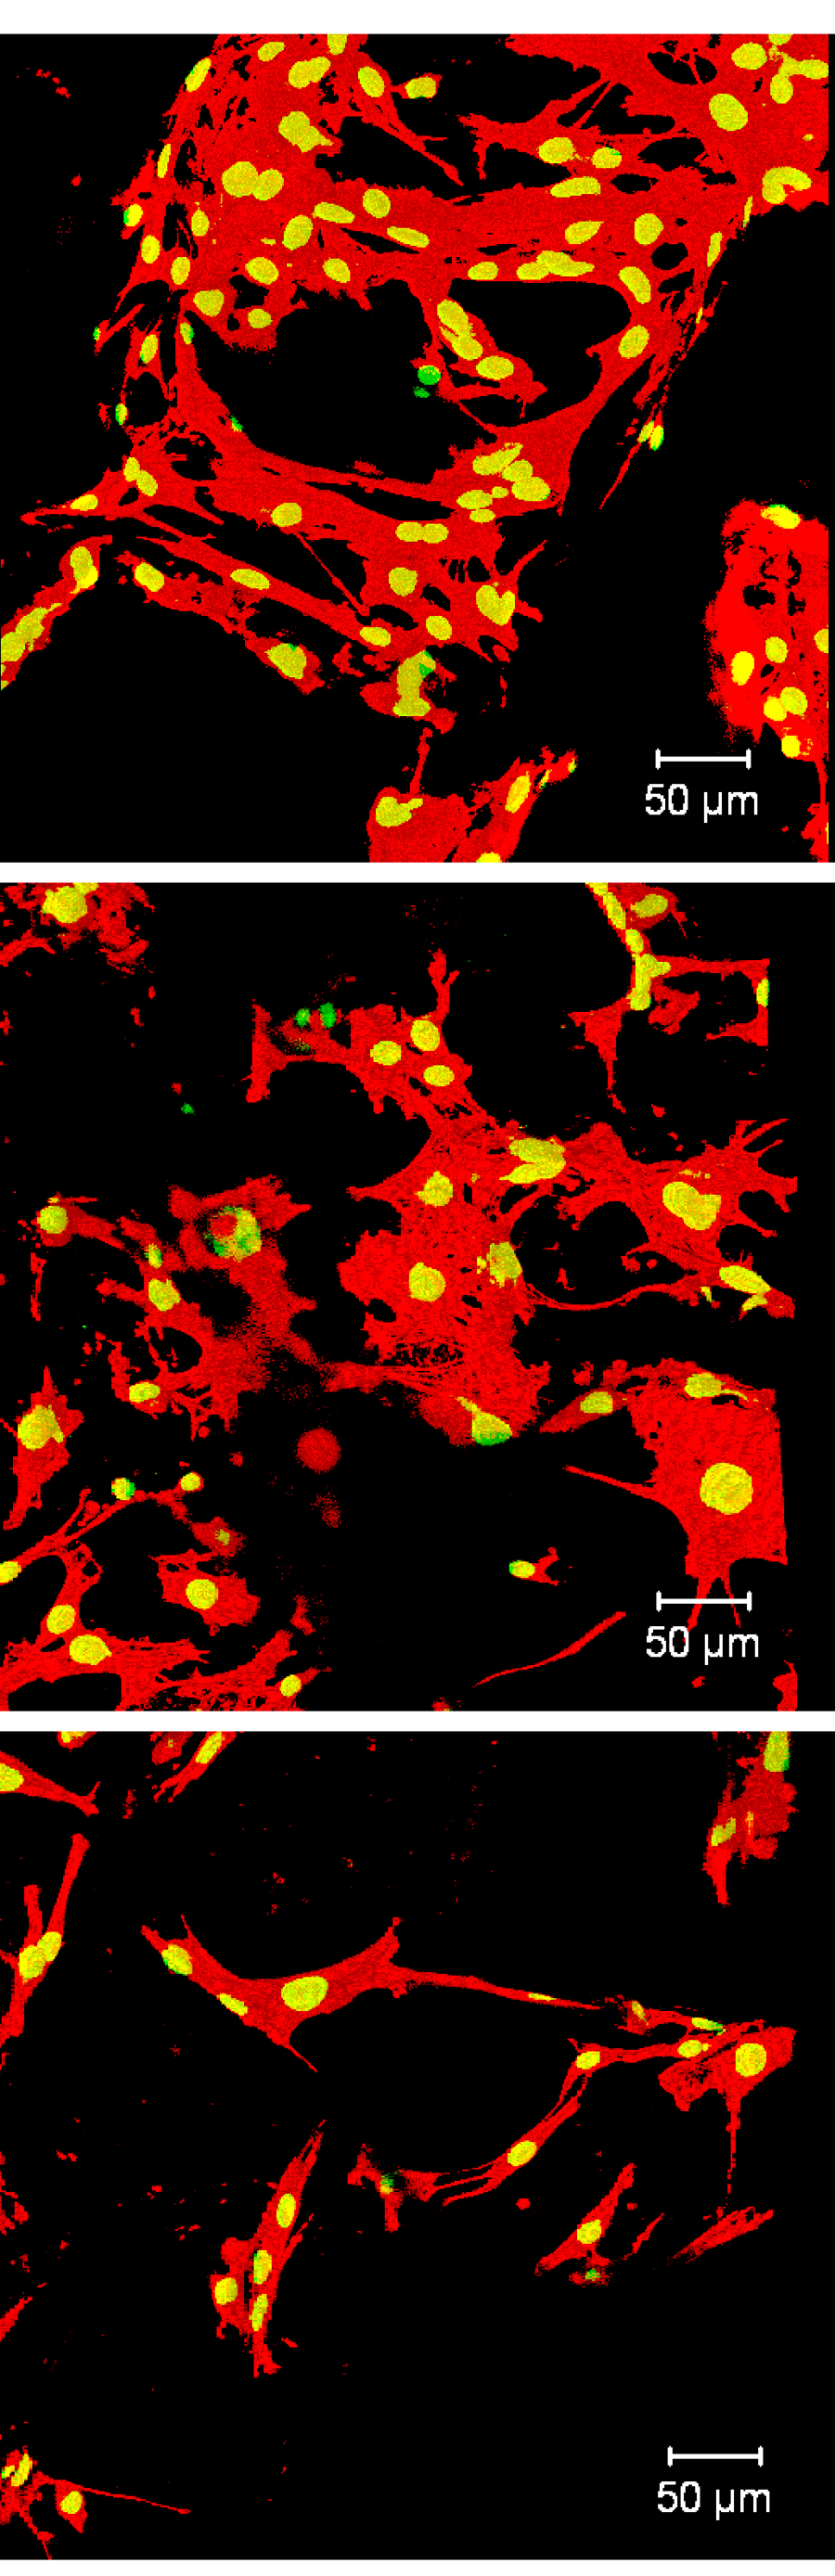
3D Test Method for Biomaterials

Confocal microscope images show how growth and adhesion of bone cells differ across a subset of 3-D scaffolds made with systematically varying blends of ingredients. Red indicates actin filaments, a cytoskeletal protein, and yellow indicates a cell nucleus.